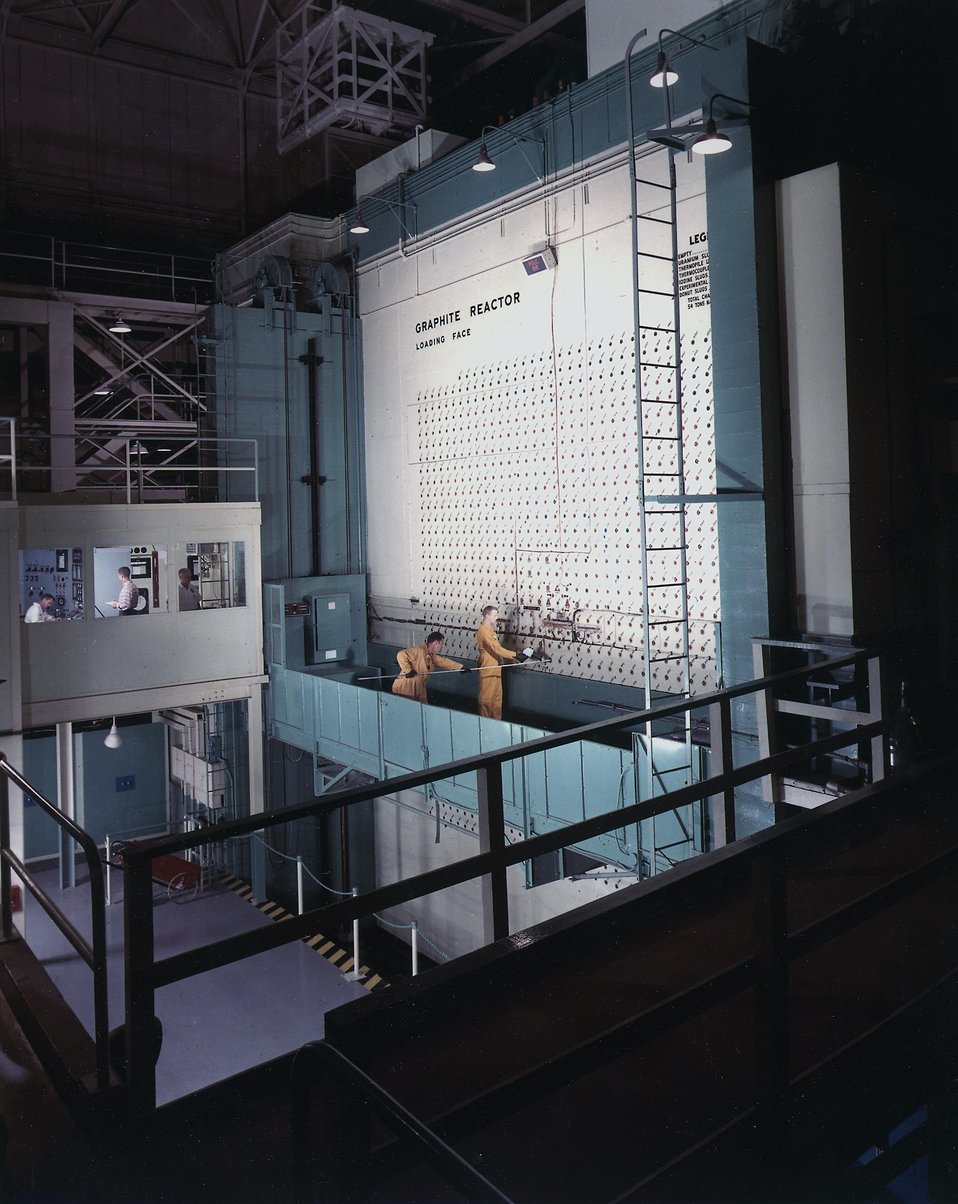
The world's first large-scale nuclear reactor went into operation on November 4, 1943, at what is now the Atomic Energy Commission's Oak Ridge (Tenn.) National Laboratory.